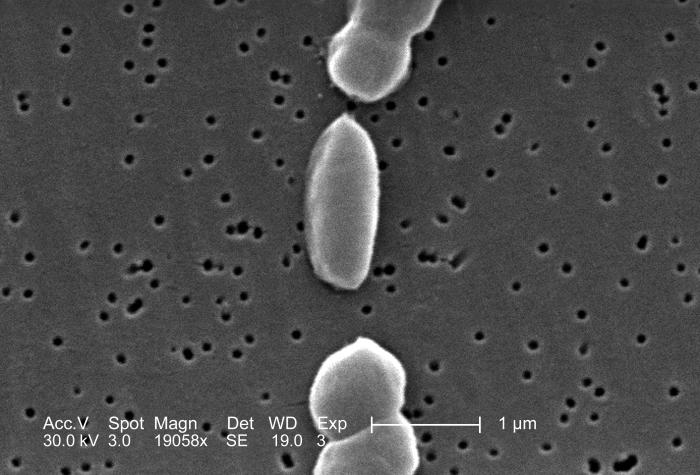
This scanning electron micrograph (SEM) depicts a number of Vibrio parahaemolyticus bacteria; Mag. 19058x.